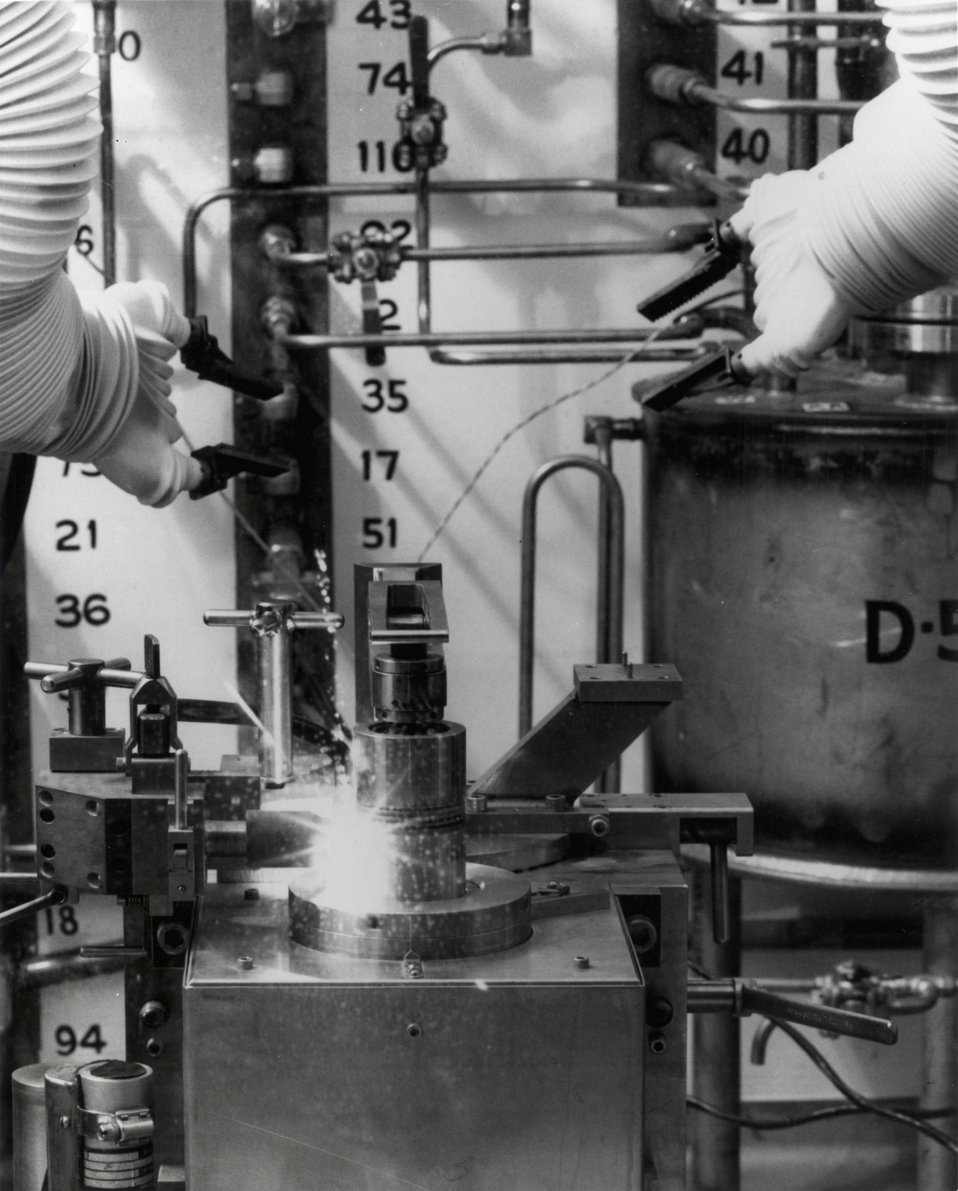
Waste Encapsulation and Storage Facility. The remote tungsten arc welder programmed to weld the ends onto stainless steel capsules filled with cesium and stronium is shown photographed through a three-foot lead glass viewing window at the cesium and stronium encapsulation plant at the Energy Research and Development Administration's complex. Hanford. Circa 1975.